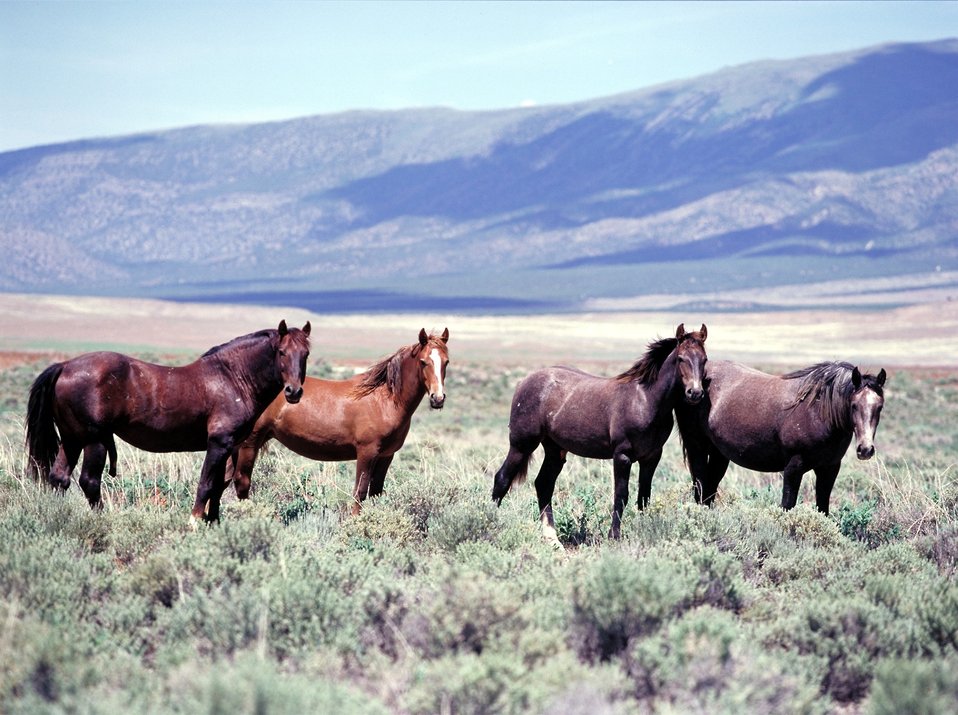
Onaqui Herd near Dugway, Utah.